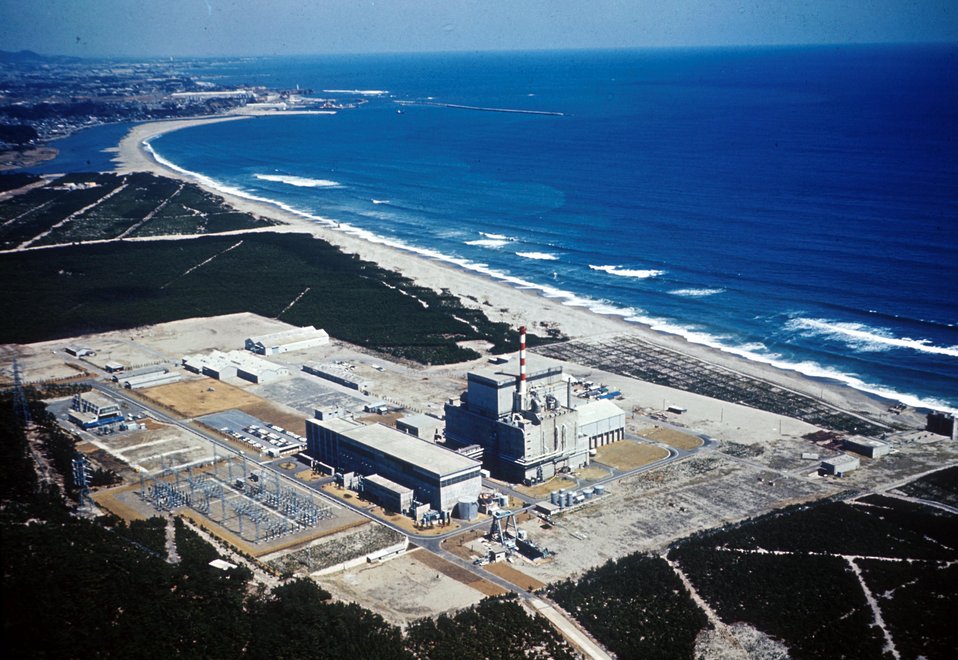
JAPC -- TOKAI